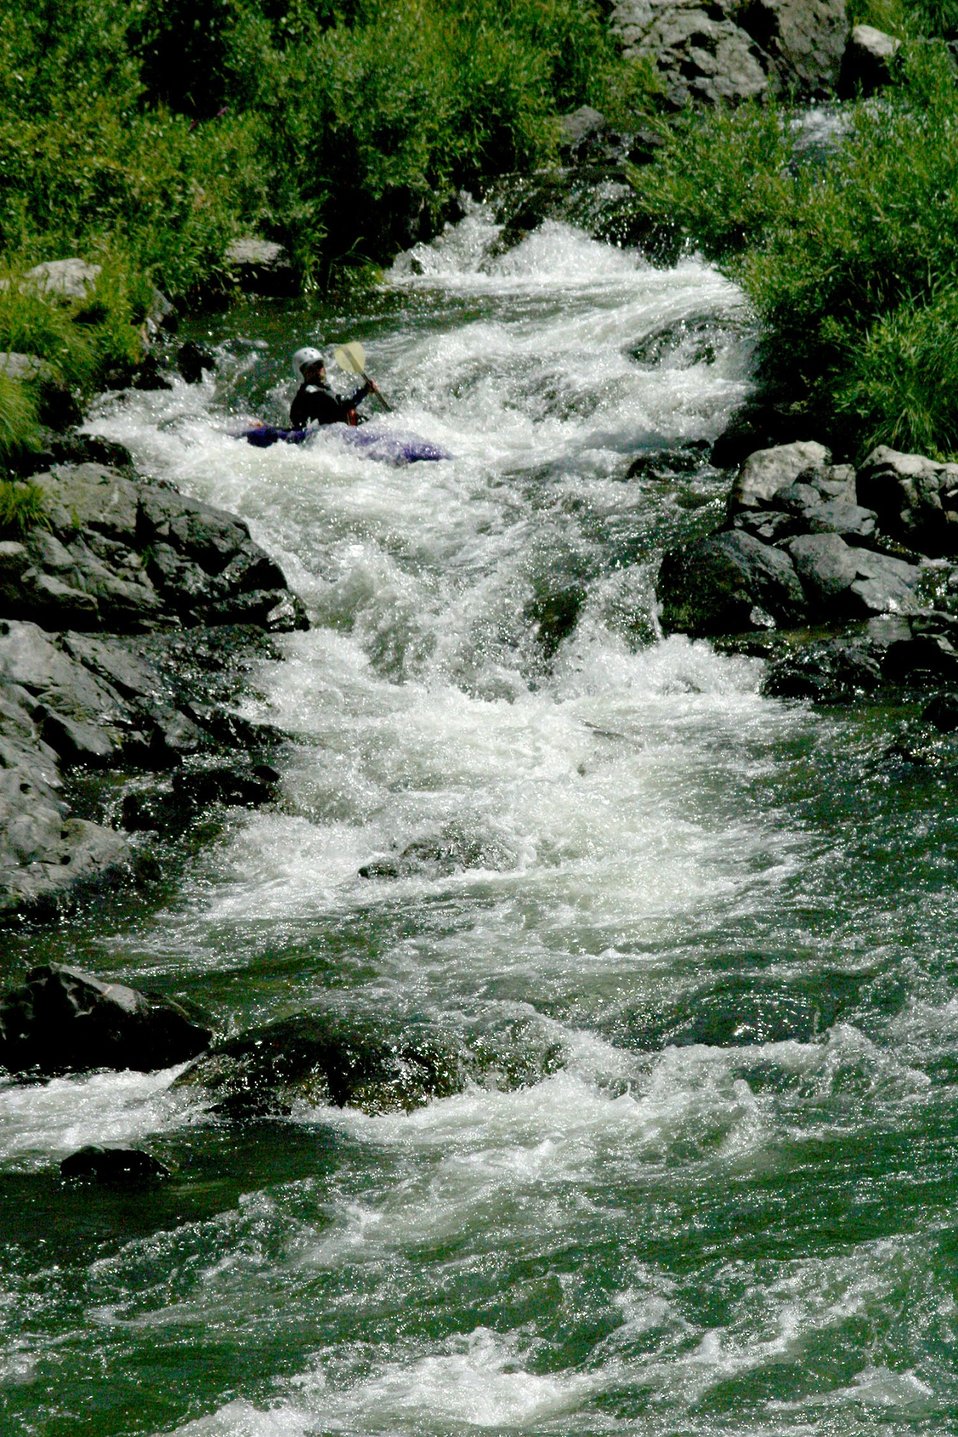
Rainie Falls Fish Ladder